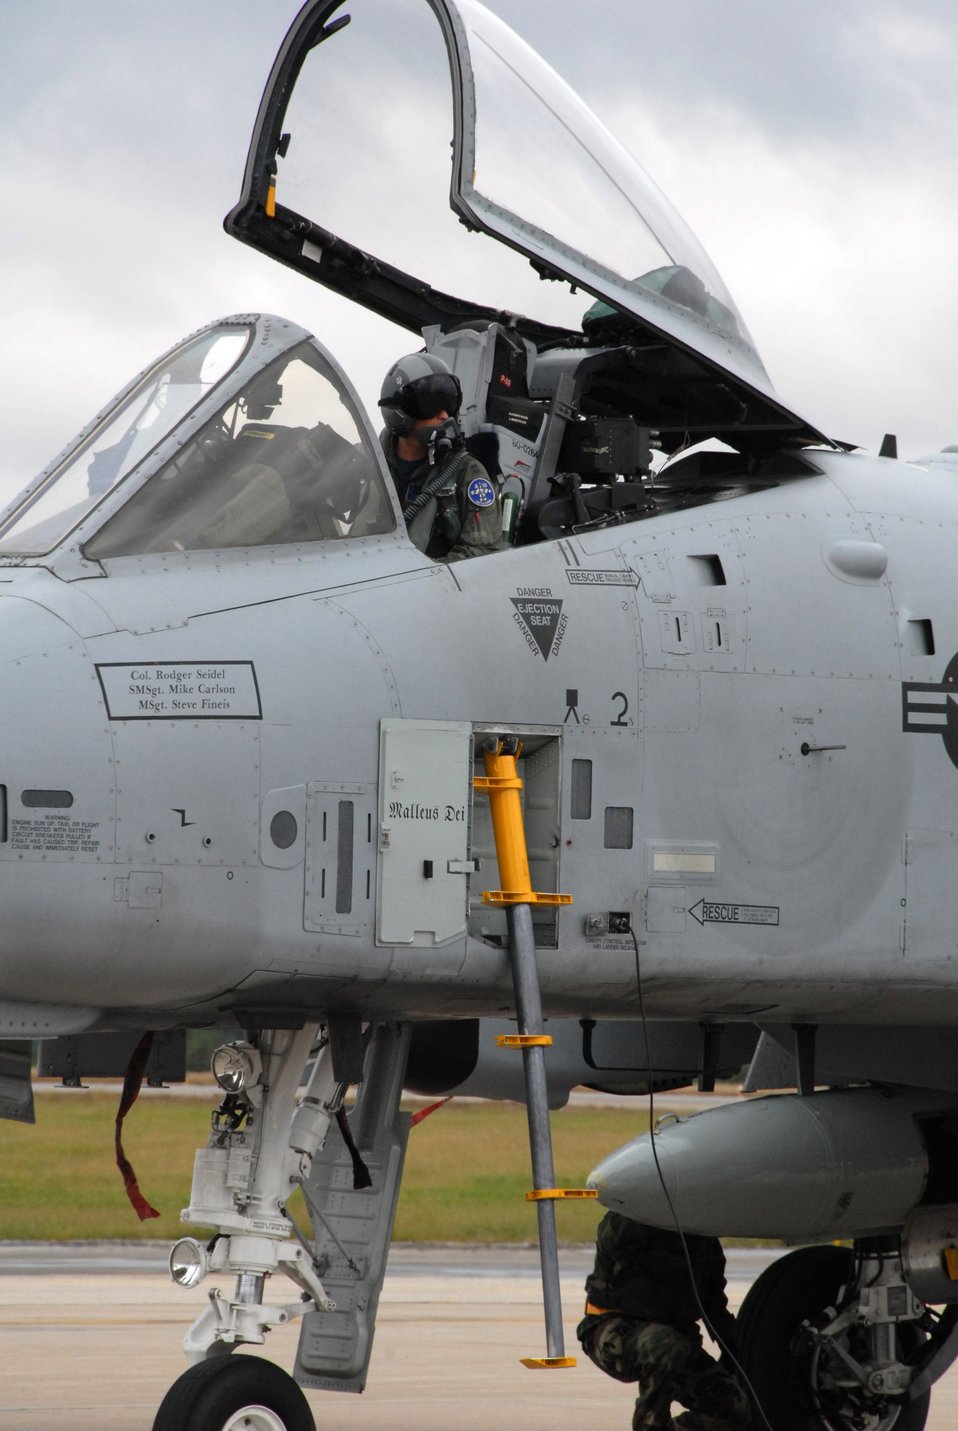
Hawgsmoke 2008

Capt Jeremy Stoner, an A-10 pilot from the Michigan Air National Guard's 110th Fighter Wing, prepares to shut down engines following his arrival at the Salina, Kan., airport Oct. 15 for Hawgsmoke 2008, a bienniel competition for A-10 pilots from across the Air Force that tests aerial bombing and gunnery skills.